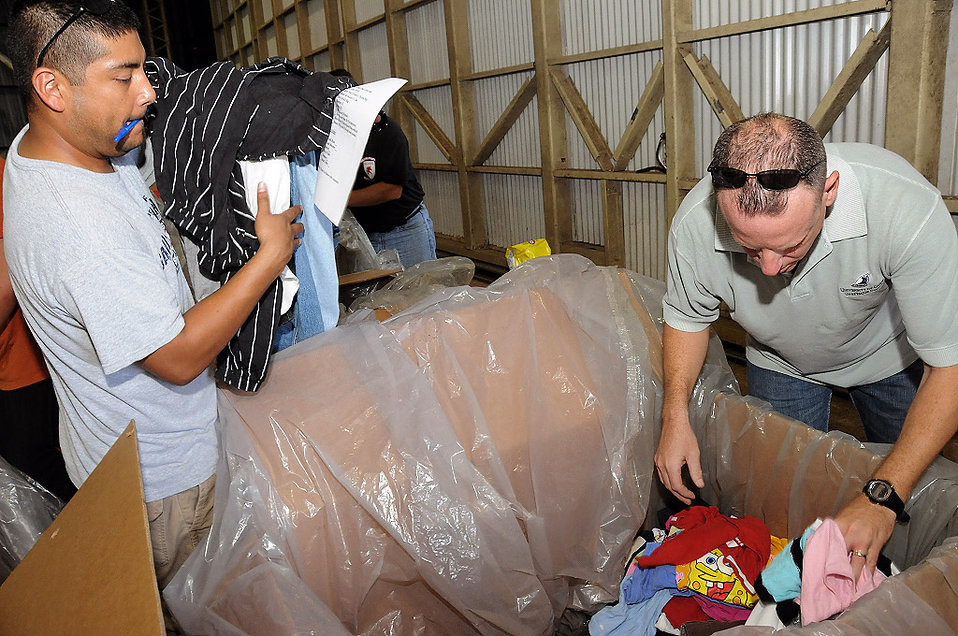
Operation Christmas Drop Holds Final Box Build

Tech. Sgts. Luiz Hernadez and John Kortes fill boxes with clothes at Andersen Air Force Base, Guam, Dec. 7 during Operation Christmas Drop's box build. Every year in December, Airmen from Andersen AFB and the 36th Airlift Squadron from Yokota Air Base, Japan, drop humanitarian supplies donated by the Guam community over the Micronesian Islands as part of a training exercise. Sergeants Hernadez and Kortes are medics assigned to the 36th Contingency Response Group.